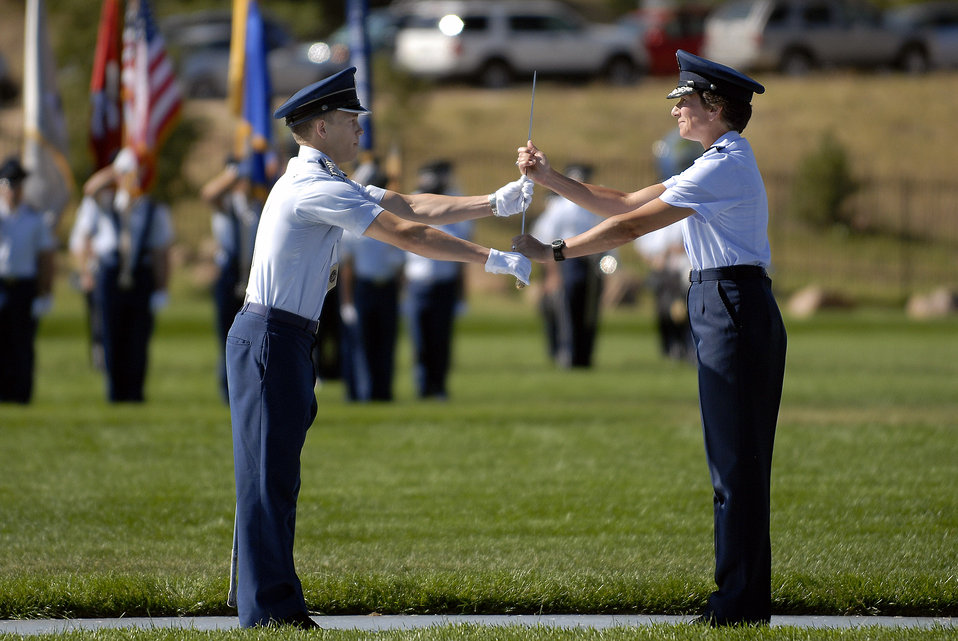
Academy cadets participate in Acceptance Day parade

During the cadet change of command ceremony at the U.S. Air Force Academy, Fall commander Cadet 1st Class Jacob Schonig receives the saber from Commandant of Cadets Brig. Gen. Susan Desjardins Aug 6 on the Stillman Parade Field near Colorado Springs, Colo.